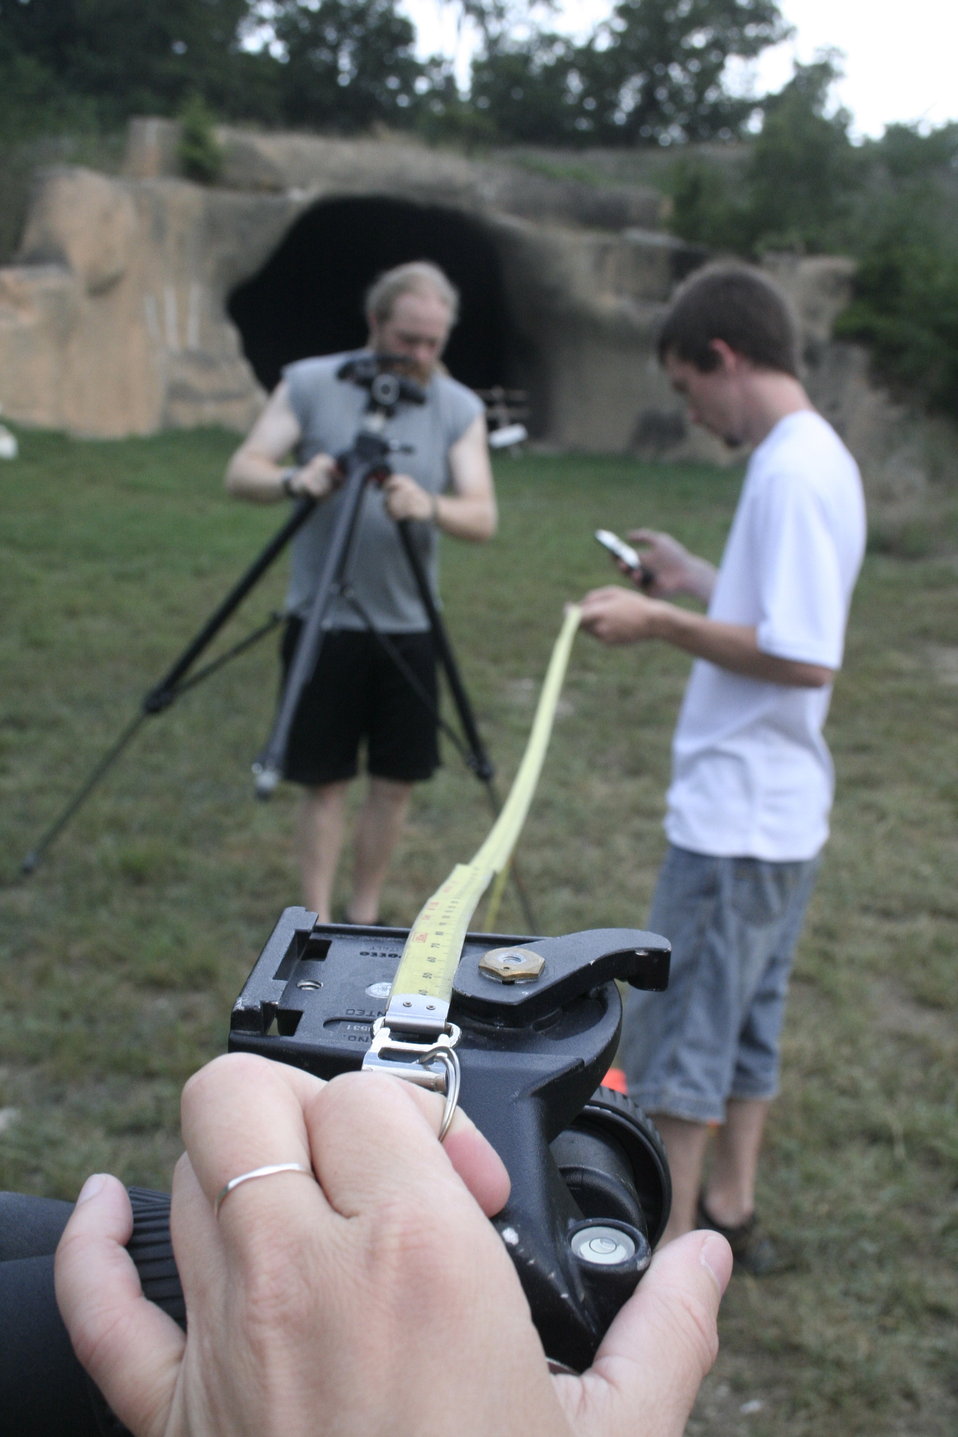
Setting cameras